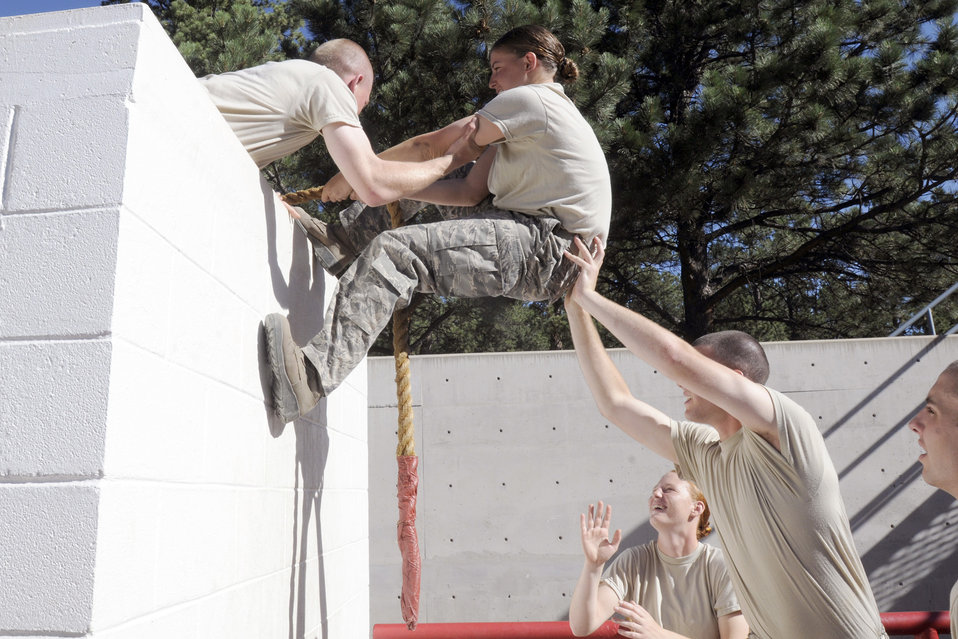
Cadets learn essential skills in Leadership Reaction Obstacle Course

Basic Cadet Ory Schuman is helped up by teammate Alyssa Van during the leadership reaction course at the U.S. Air Force Academy, Colo., July 16, 2010. The cadets learned essential problem solving and leadership techniques from the course.